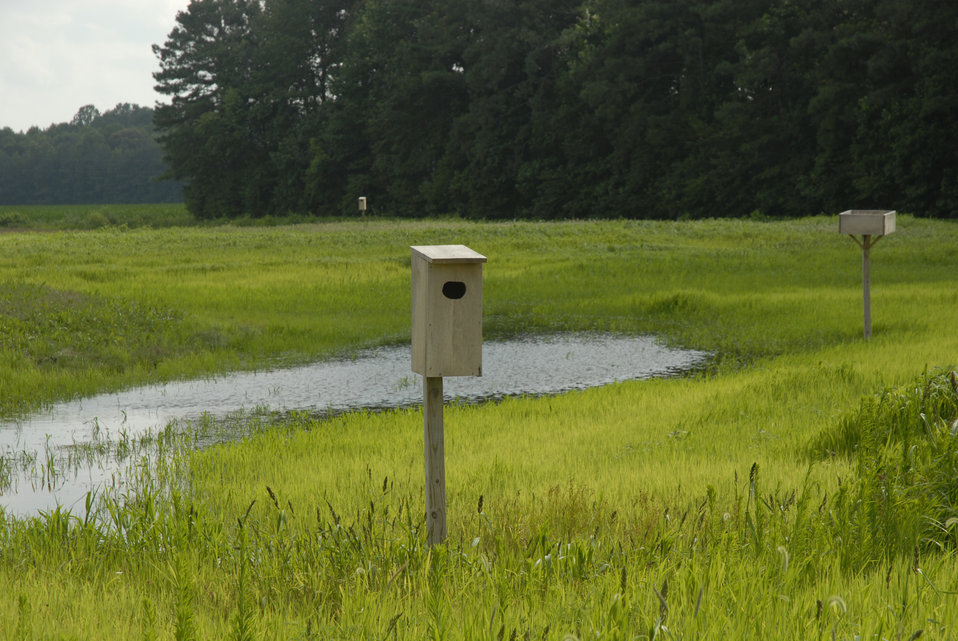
The U.S. Department of Agriculture (USDA) Natural Resources Conservation Service (NRCS) Conservation Effects Assessment Project (CEAP-Wetlands) study of the Chesapeake Bay concentrates on the ecological benefits of conserving wetland areas in Delaware on July 7, 2008. Wetlands provide significant ecosystem services that include floodwater storage, water quality improvement, biodiversity support, and wildlife habitat. Certain practices are aimed specifically at maintaining or restoring wetland ecosystem services.